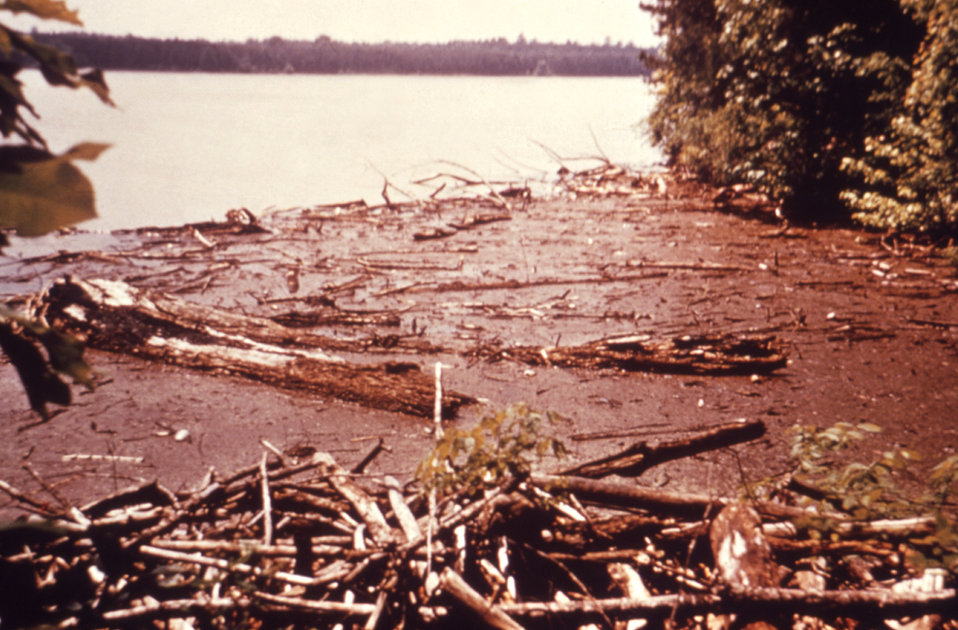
This 1976 photograph shows logs and debris at the edge of a reservoir at an unknown location in the United States.